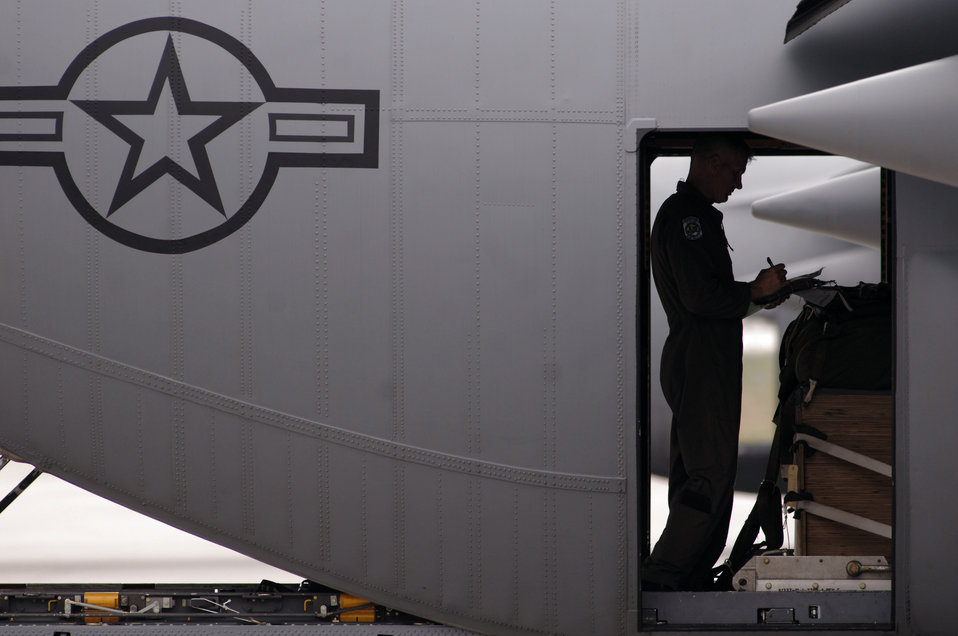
Airdrop

Senior Master Sgt. Brandon Braughman calculates the weight of the cargo onboard a C-130 Hercules at Ramstein Air Base, Germany, that will be dropped over Grafenwoehr Army Garrison, Germany. Sergeant Broughman is assigned to the 37th Airlift Squadron.